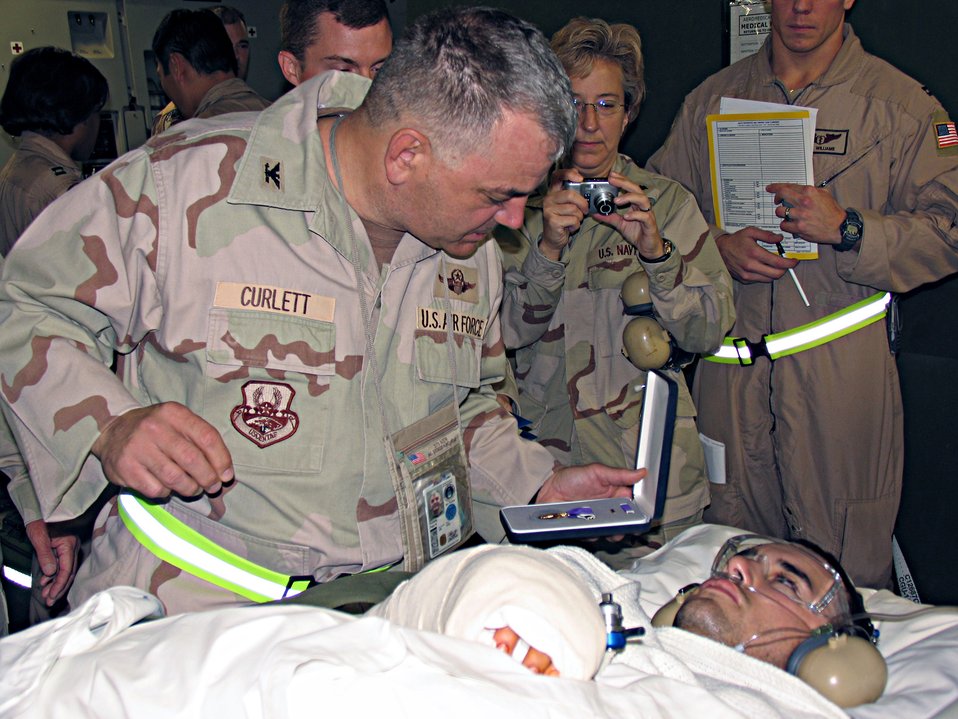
Purple Heart

Col. Paul Curlett, 386th Air Expeditionary Wing Commander, presents Airman 1st Class Brandon Byers, 586th Expeditionary Security Forces Squadron Area Security Operations gunner, with a Purple Heart for injuries he received when an improvised explosive device exploded during a mounted patrol.